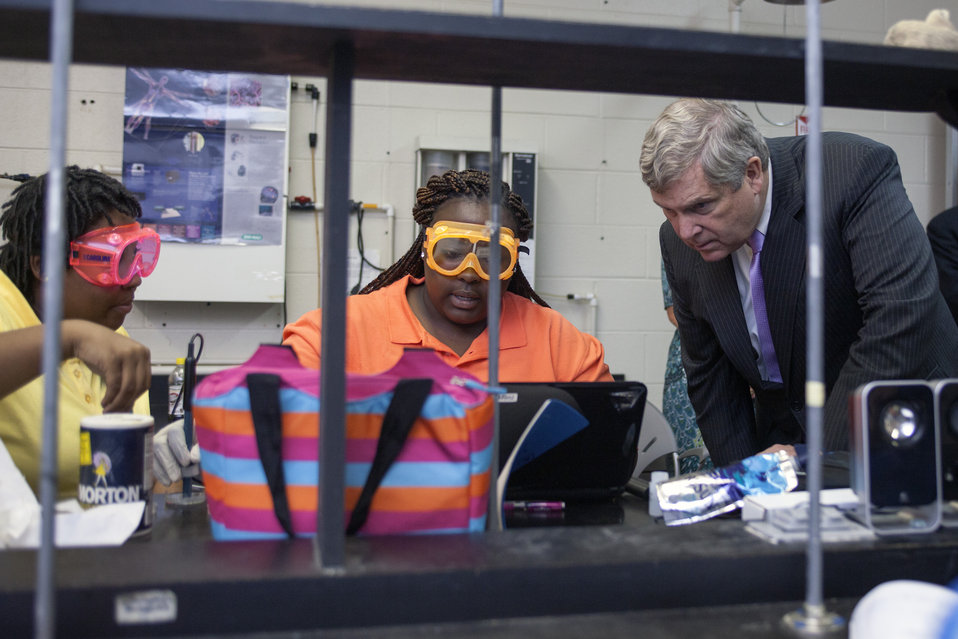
Agriculture Secretary Tom Vilsack tours the school facilities at Northeast Regional School of Biotechnology and Agriscience in Plymouth, NC on Friday, Aug. 15, 2013.